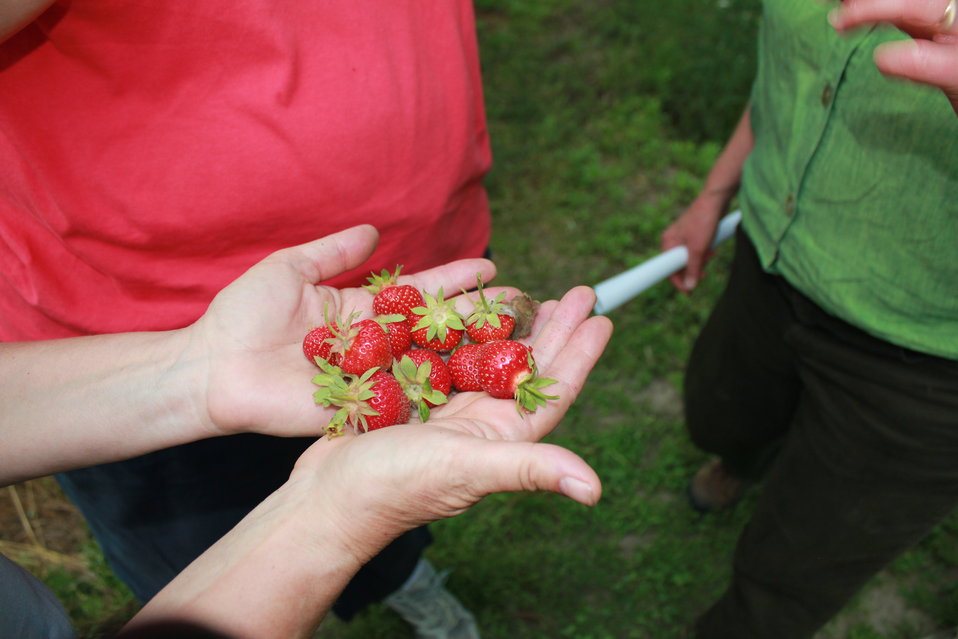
Pollinated Strawberries in Hadley, Massachusetts